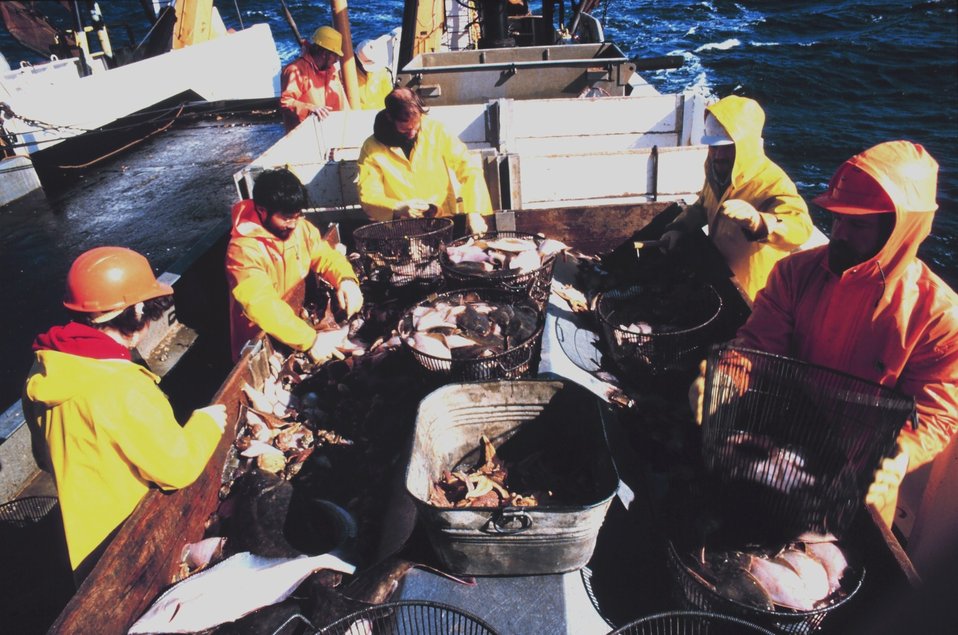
Scientists sorting fish on the MILLER FREEMAN.